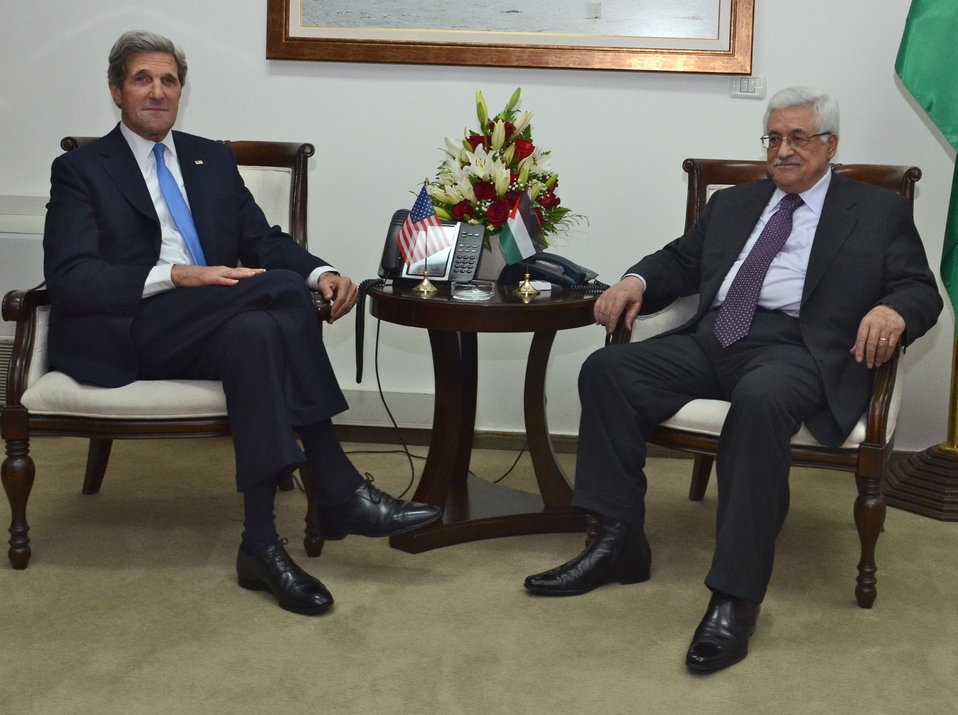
Secretary Kerry Meets With President Abbas in Ramallah

U.S. Secretary of State John Kerry meets with President of the Palestinian Authority Mahmoud Abbas in Ramallah, April 7, 2013.